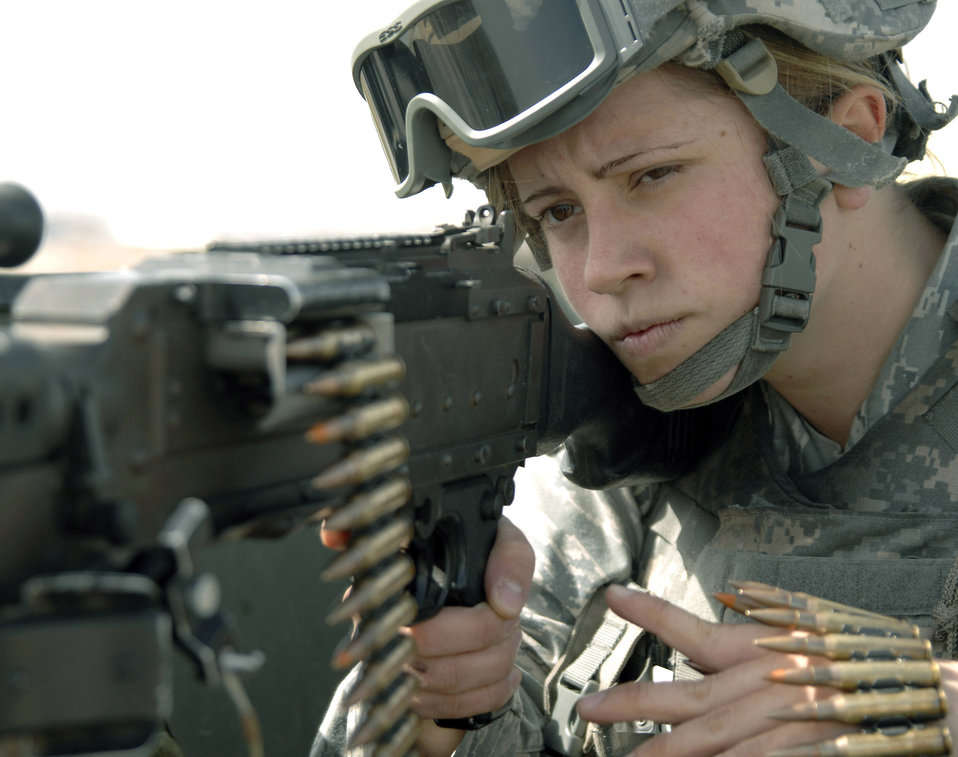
Taking aim

Airman Samantha Allred peers down the barrel of a machine gun March 9 while on the flightline at Incirlik Air Base, Turkey. Airman Allred, along with fellow security forces, provides protection for the U.S. Air Forces in Europe's largest weapons storage area.